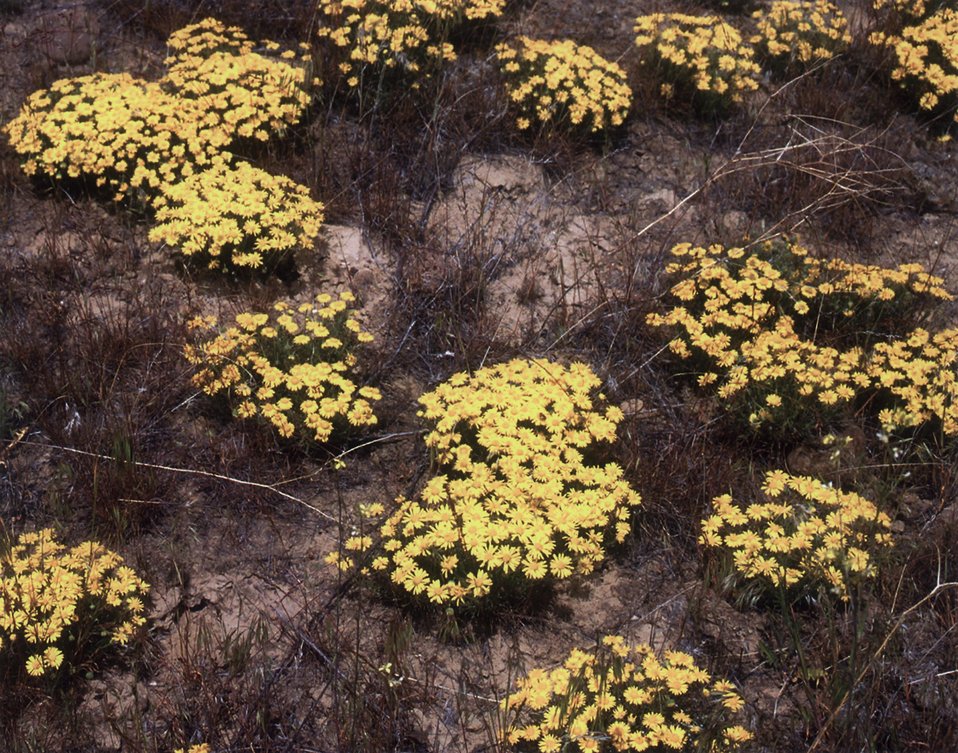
Daisies are amongst the many wild flowers that are found at the Hanford Site.